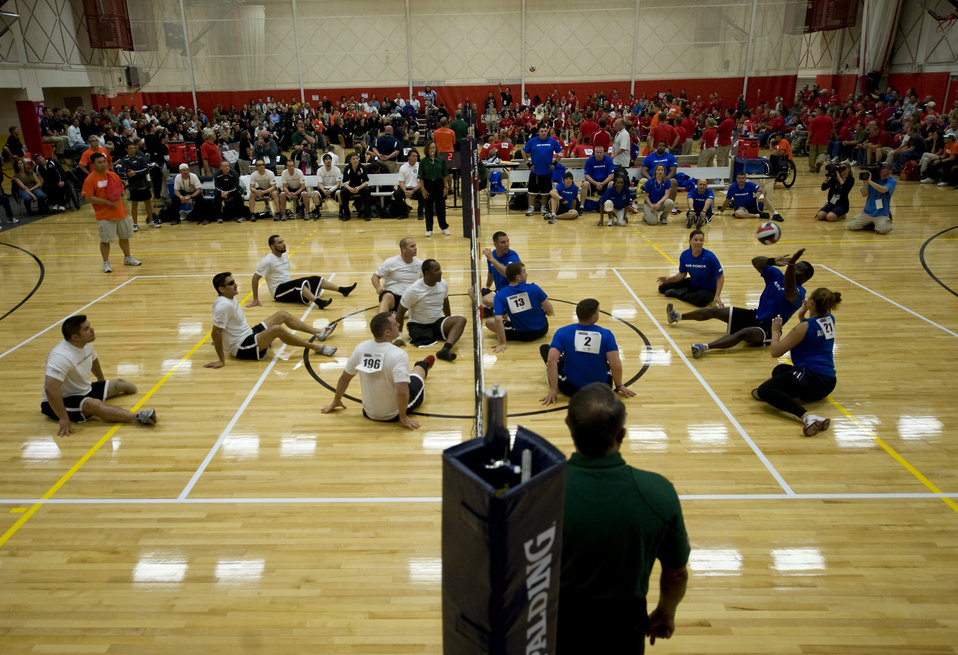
SOCOM defeats Air Force

The Air Force and United States Special Operations Command battle during sitting volleyball competition at the 2011 Warrior Games in Colorado Springs, Colo., May 17. SOCOM won the series 2 games to 1.